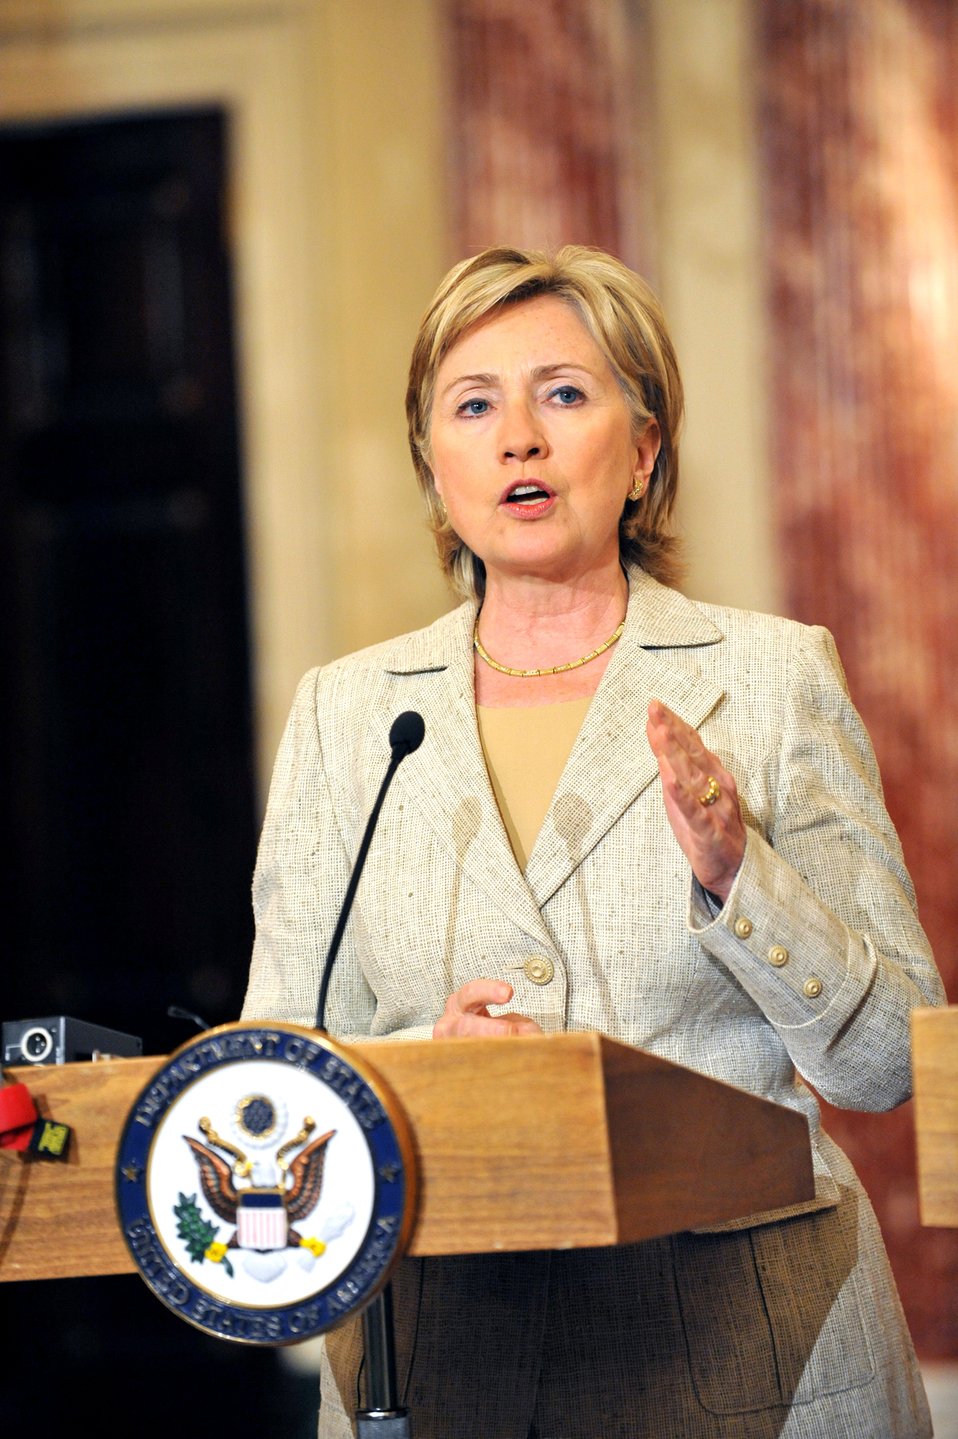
Secretary Clinton Hosts North American Trilateral Ministerial

U.S. Secretary of State Hillary Rodham Clinton speaks during the North American Trilateral Ministerial with Her Excellency Dr. Patricia Espinosa Cantellano, Secretary of Foreign Relations of Mexico and The Honorable Lawrence Cannon, P.C., M.P., Minister of Foreign Affairs of Canada, in the Benjamin Franklin Room of the U.S. Department of State in Washington, DC July 16, 2009.